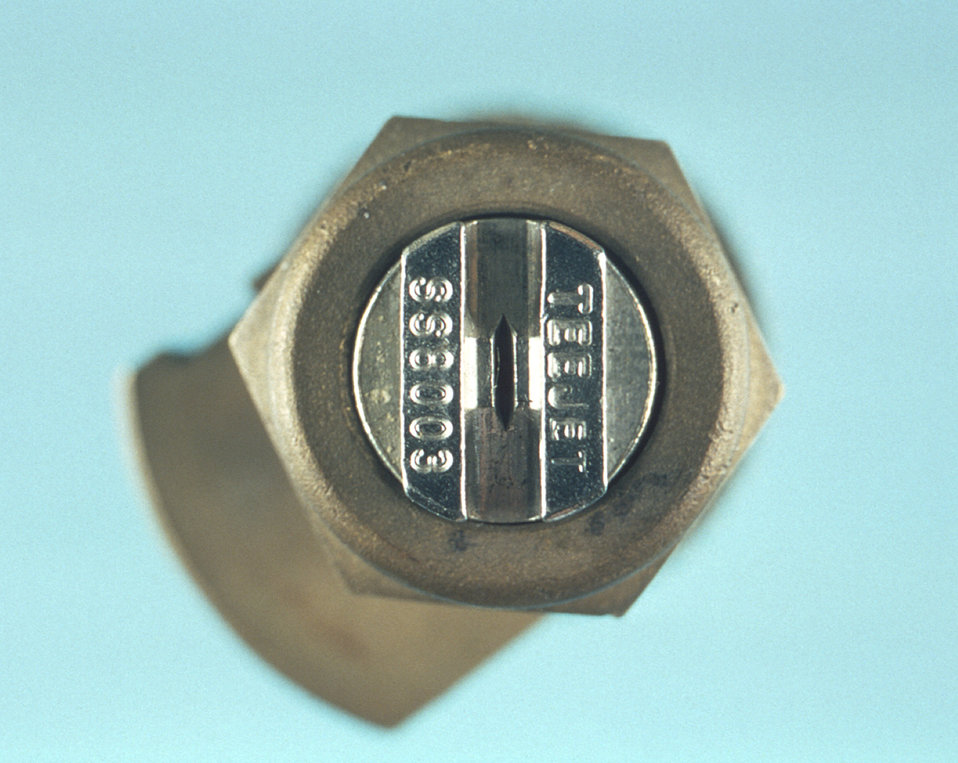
This photograph depicts an enlarged view of the exit port of a TeeJet SS8003 spray nozzle through which passes an insecticidal spray.